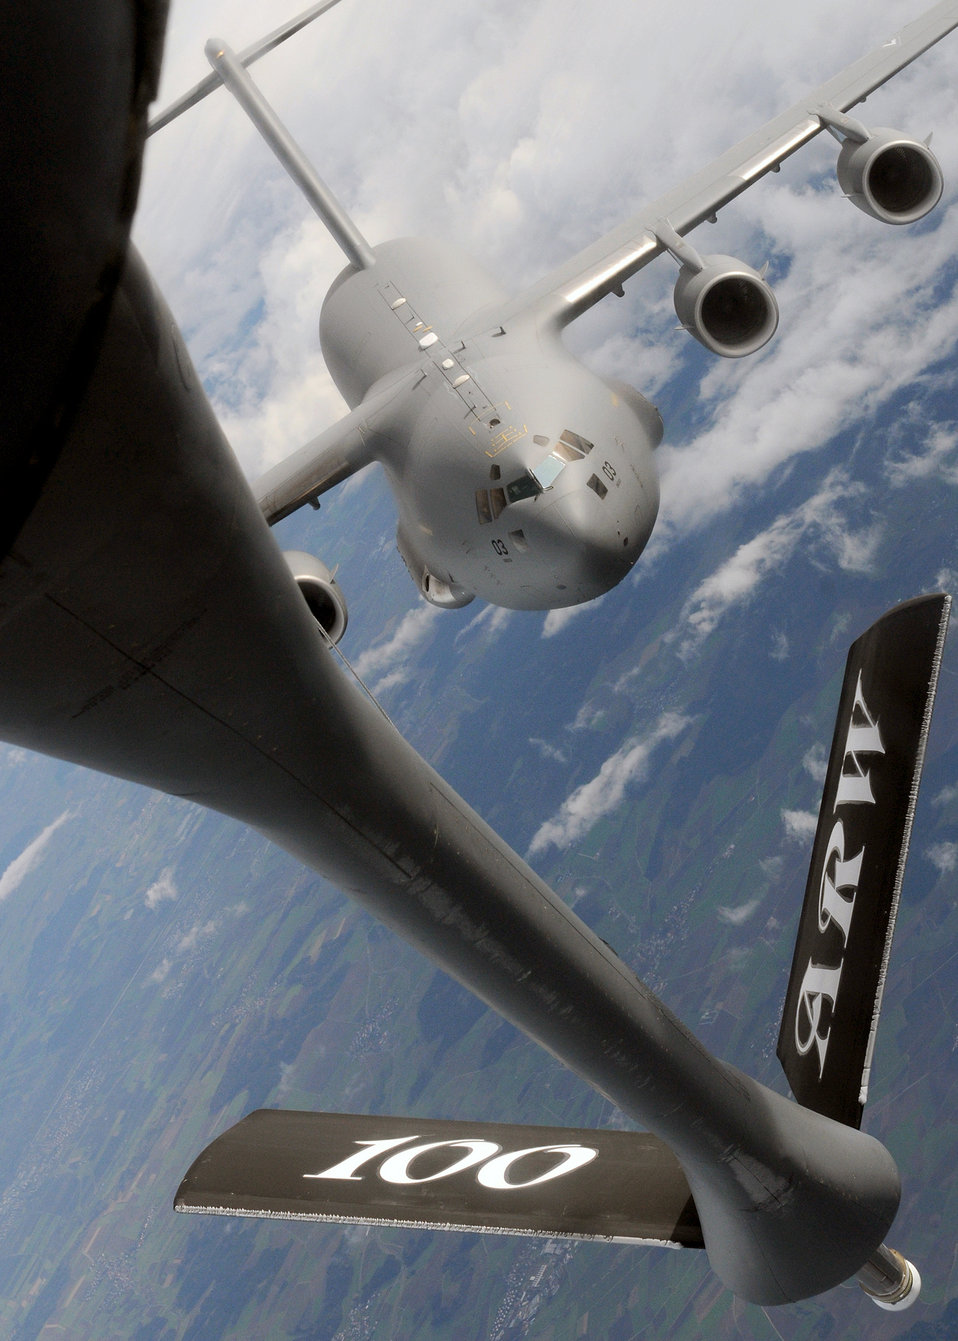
Partnership makes for expanded air refueling capabilities

A C-17 Globemaster III from the Heavy Airlift Wing at Papa Air Base, Hungary, approaches the boom of a 100th Air Refueling Wing KC-135 Stratotanker Nov. 12, 2010, over Germany. During the training mission, both units received training they don't get the opportunity to do on a regular basis.